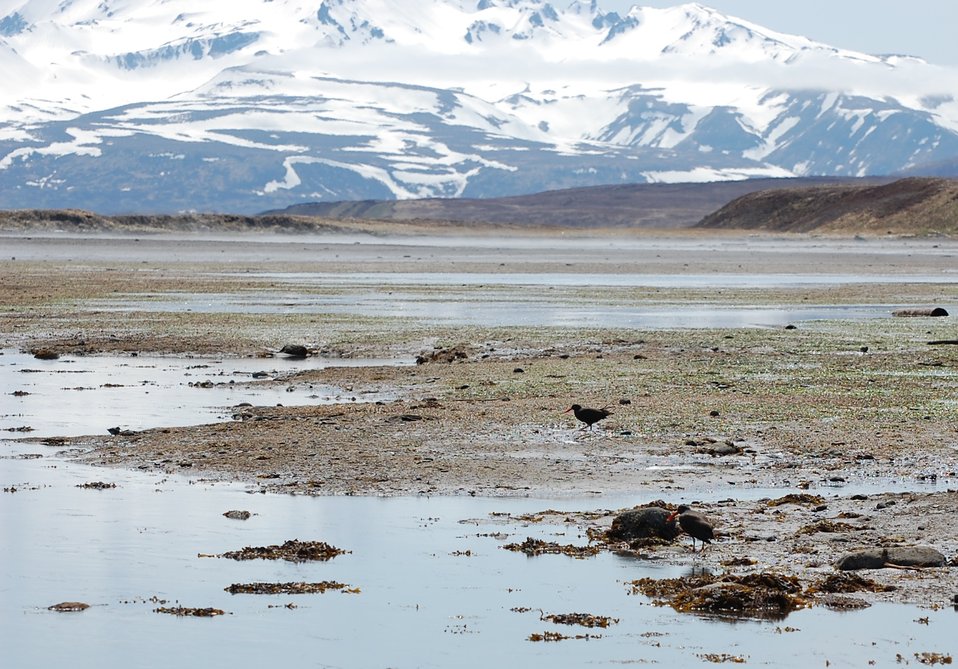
Black Oystercatcher

Kinzarof Lagoon, Izembek National Wildlife Refuge
Photo by Kristine Sowl,
USFWS, Public Domain